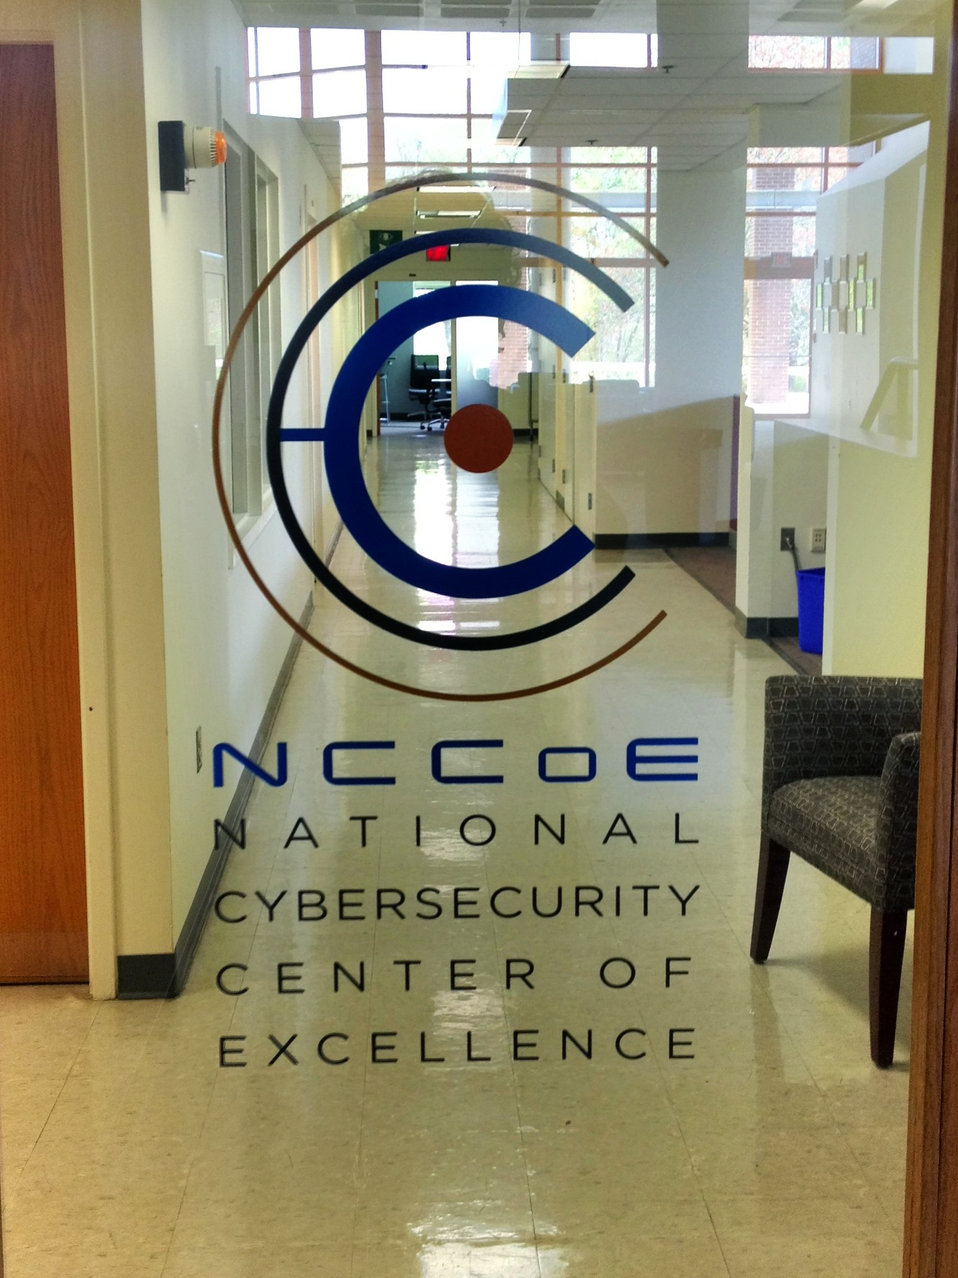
NCCOE

The National Cybersecurity Center of Excellence in Maryland.